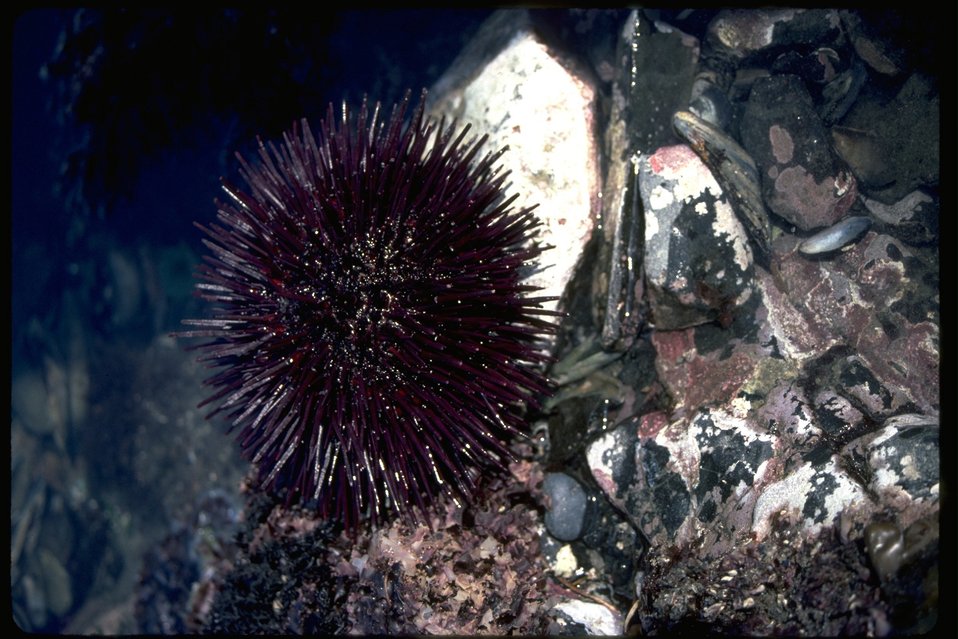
Sea Anamone in the Yaquina Head Tidepools.